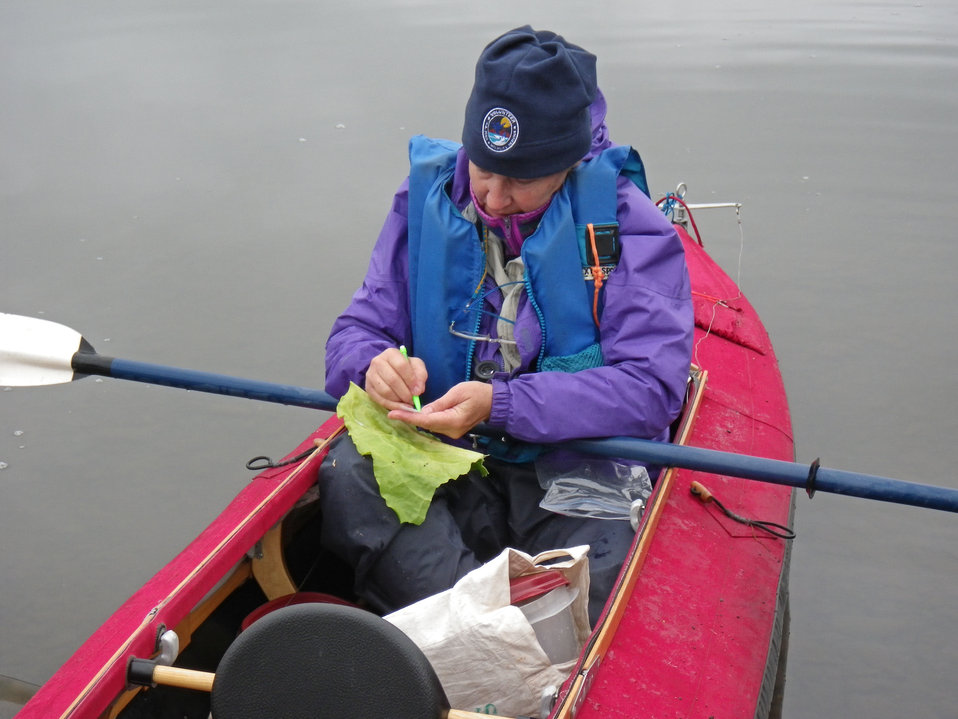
Volunteer Stacy Studebaker on a botany survey in Uganik

Photo Credit: Mike Sirofchuck/USFWS
Source: Kodiak NWR